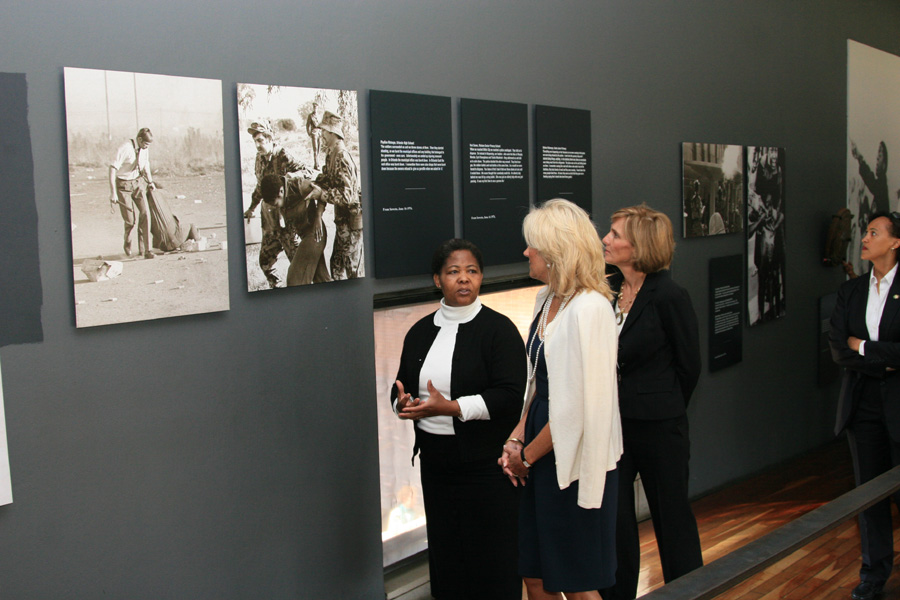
Dr. Jill Biden and Liz Berry Gips Visit Hector Pieterson Museum

Dr. Jill Biden, wife of Vice President Joseph Biden, and Liz Berry Gips, wife of U.S. Ambassador to South Africa Donald H. Gips, visit the Hector Pieterson Museum in Soweto, South Africa, on June 12, 2010.